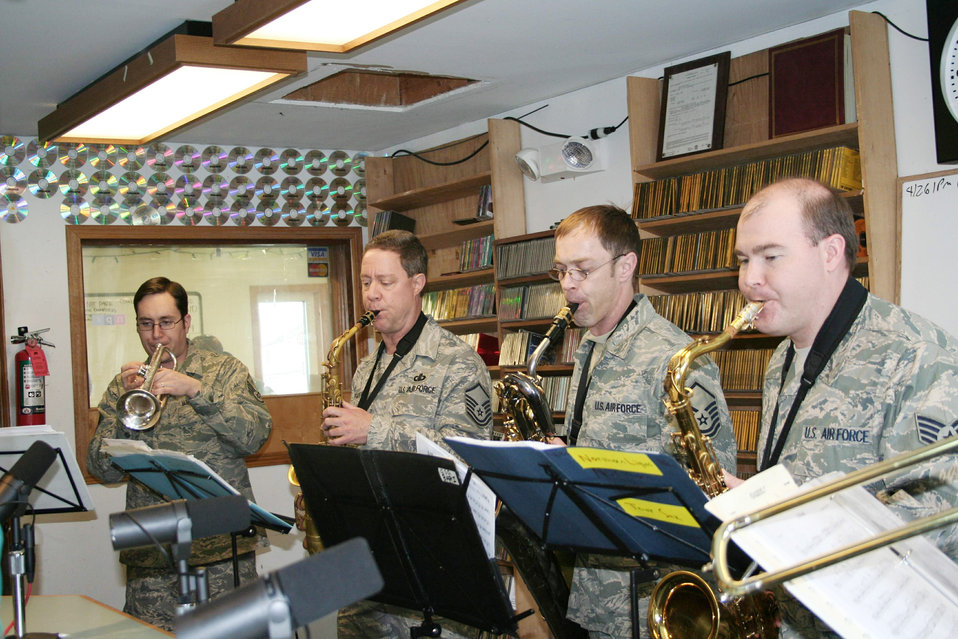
Northern Lights entertain native Alaskans during Operation Artic Care

Members of the Pacific Air Forces Northern Lights brass ensemble perform live on a local radio station April 20, 2010, in Kotzebue, Alaska.